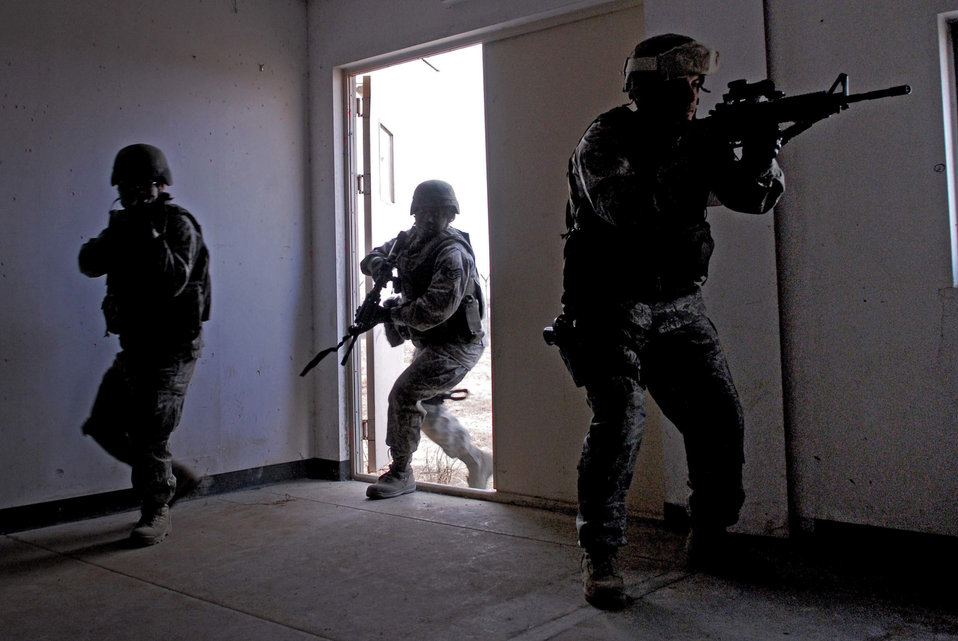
Osan Airmen train to fight

Airmen of the 51st Security Forces Squadron train on how to operate and survive in a war environment during the base's combat readiness course Jan. 22 at Osan Air Base, South Korea.